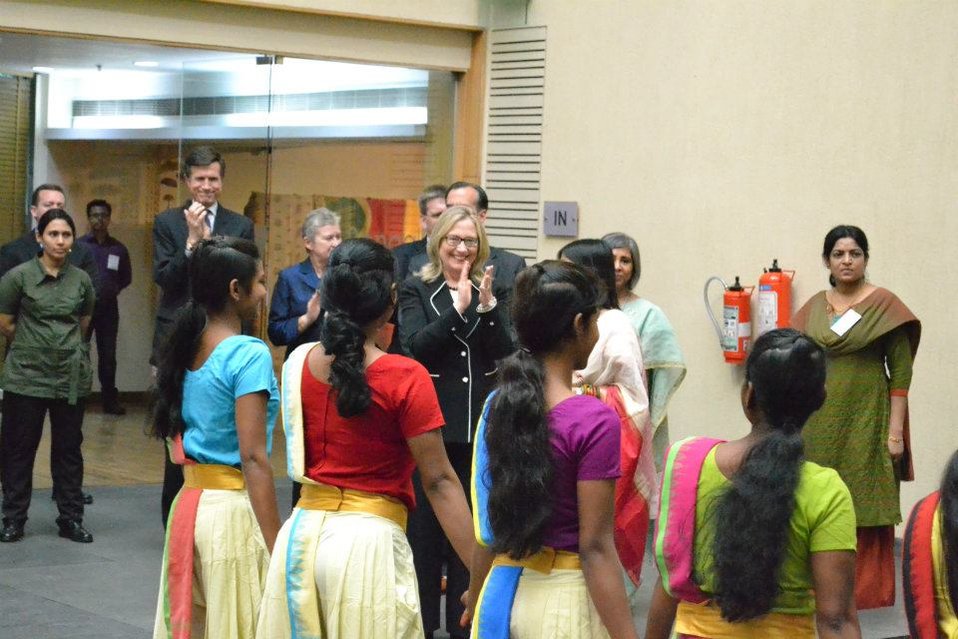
Secretary Clinton Attends the Anti-Trafficking Champions Event

U.S. Secretary of State Hillary Rodham Clinton attends the Anti-Trafficking Champions Event in Kolkata, India, on May 6, 2012.